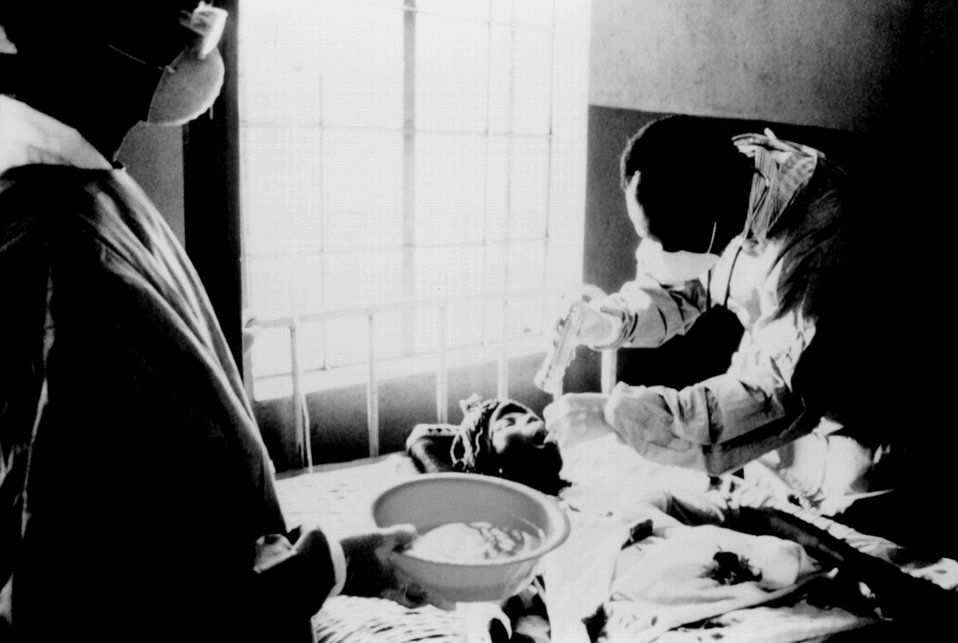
This doctor in a West African hospital is examining a Lassa fever patient in 1977.